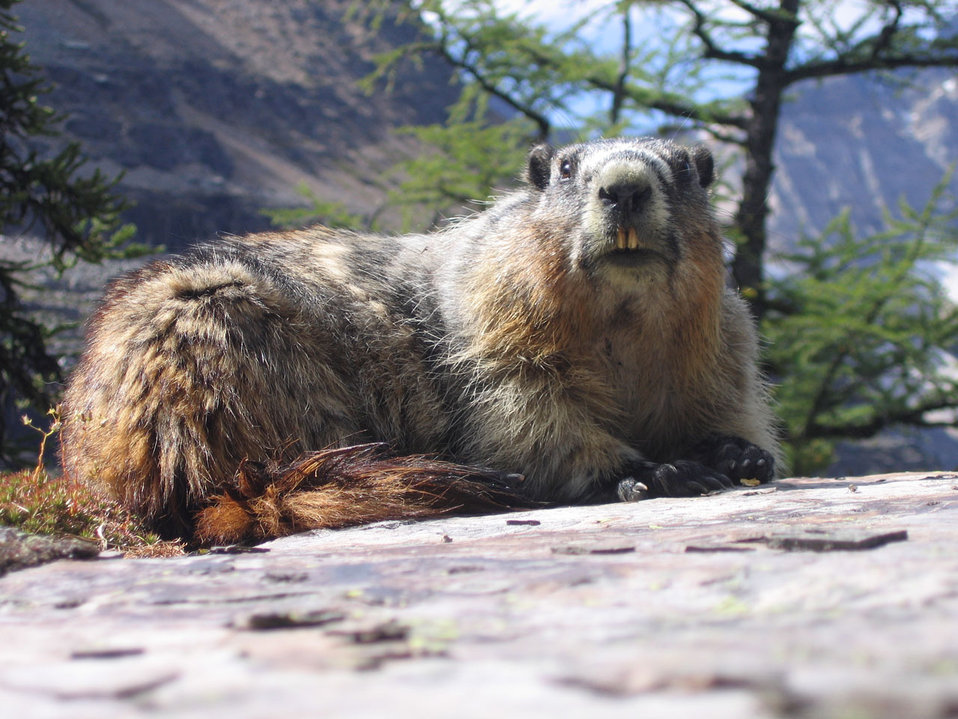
Marmot

Hoary marmot.